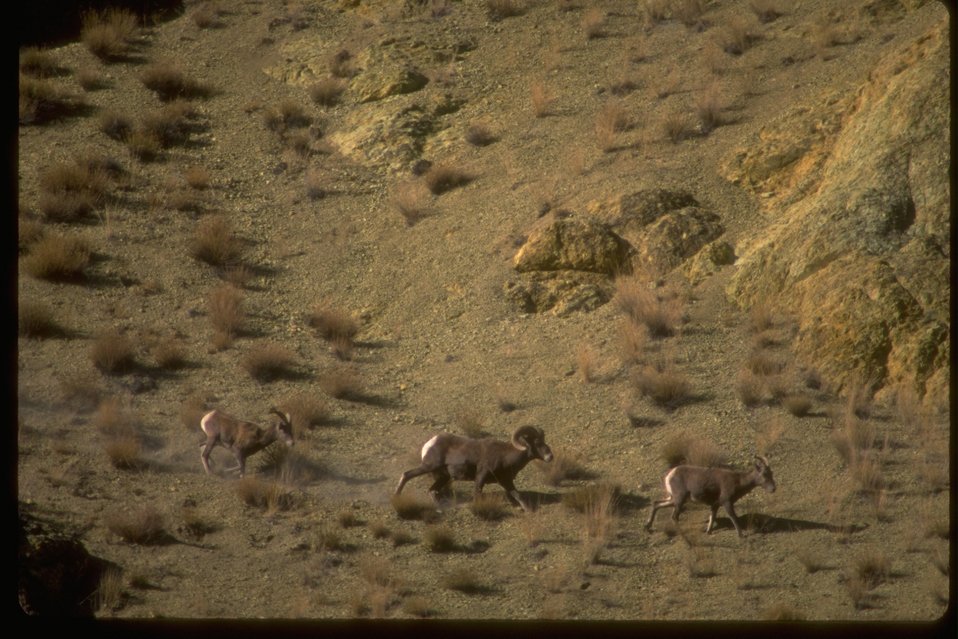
Bighorn Sheep